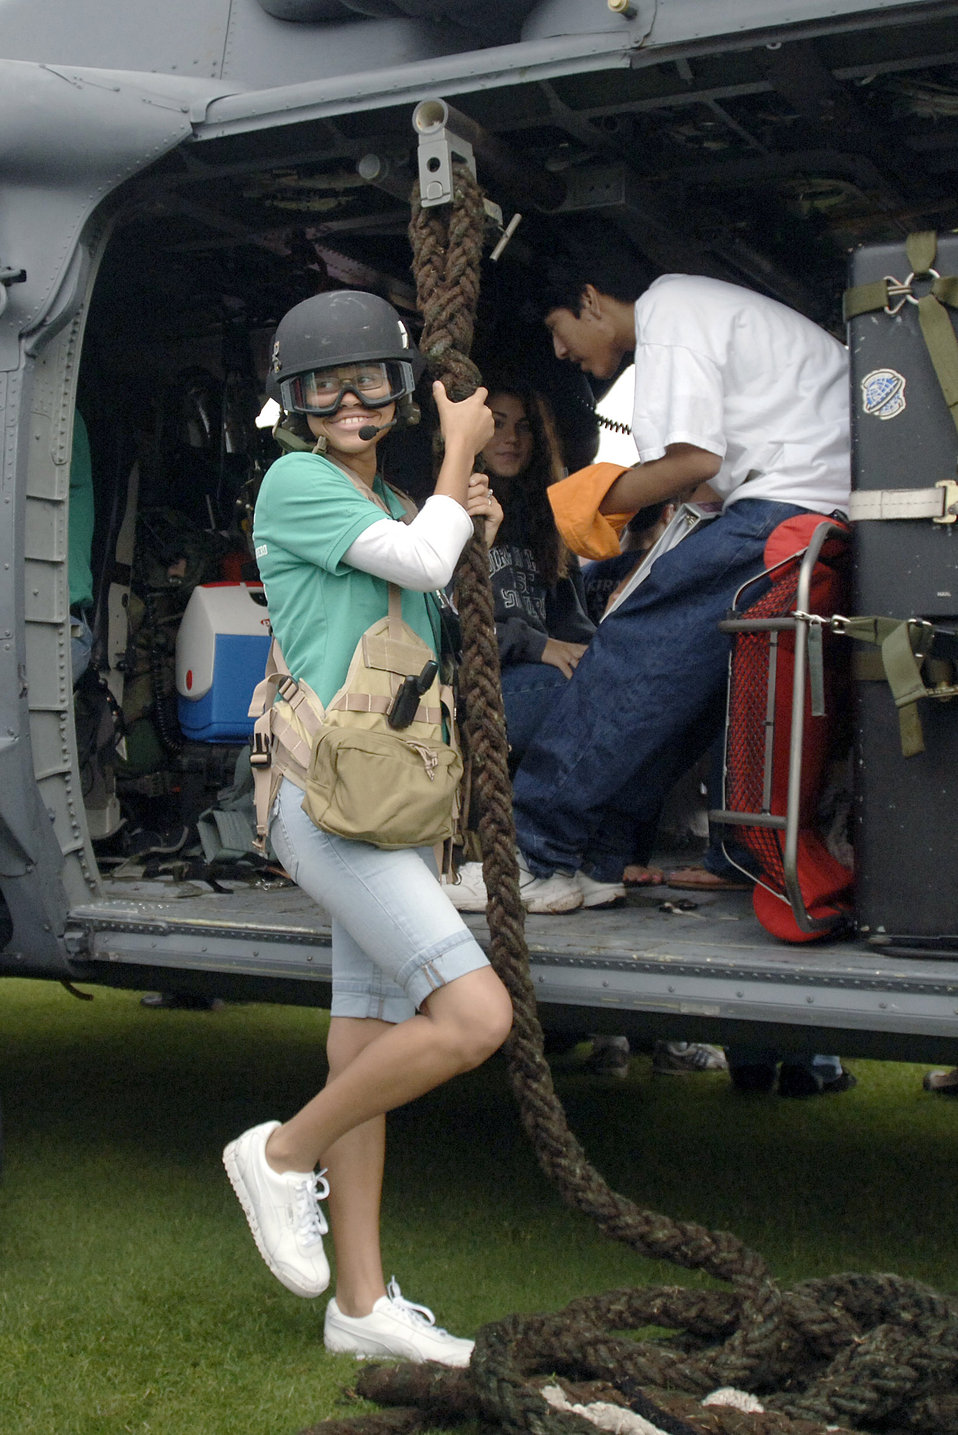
Airmen visit schools as part of Air Force Week Atlanta

Marietta High School student Emily Spell interacts with a HH-60G Pave Hawk helicopter as part of an Air Force Week Atlanta event at Marietta High School Oct. 9 in Marietta, Ga. The event helped to educate students about the U.S. Air Force.